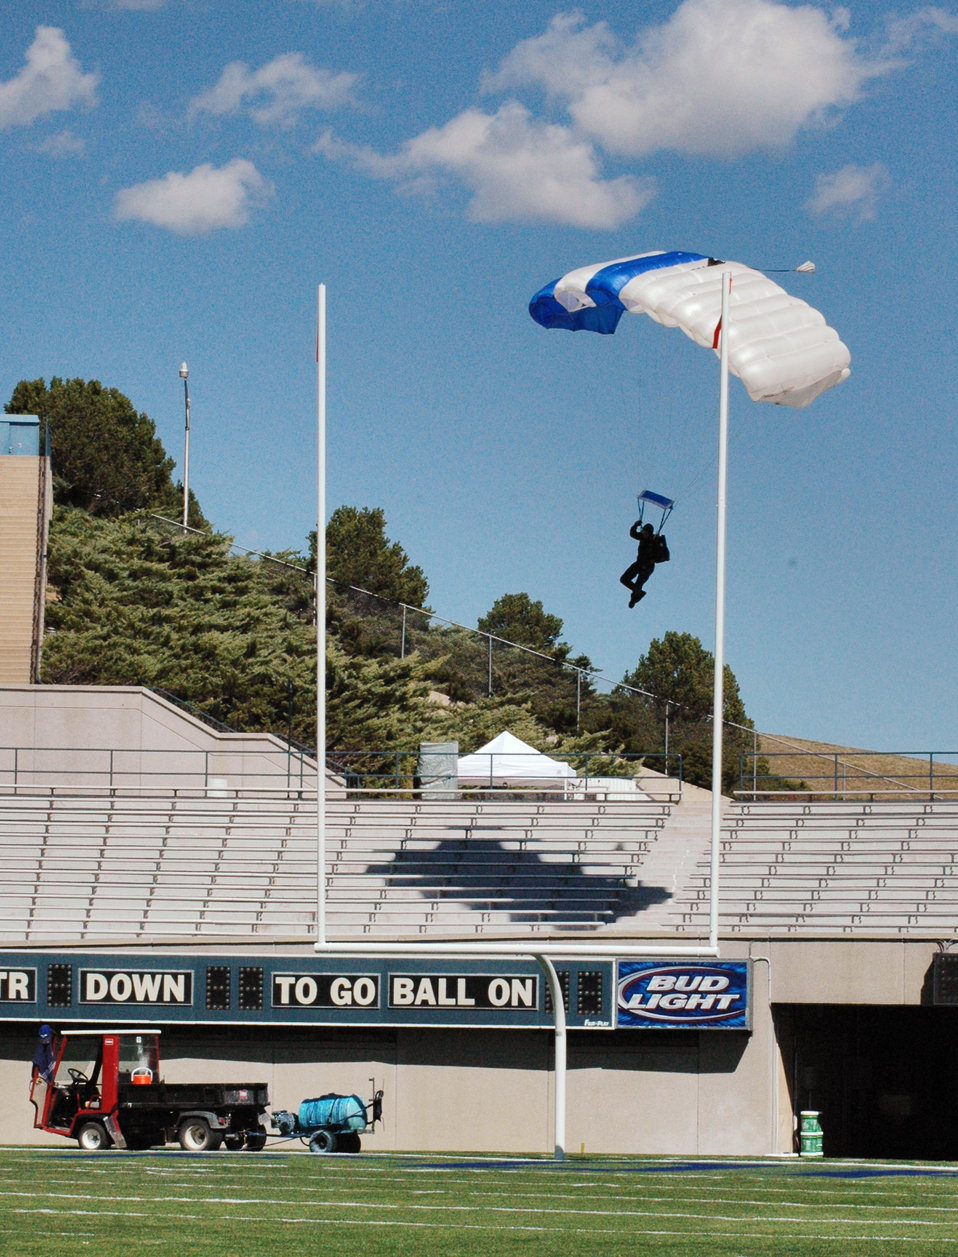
Wings of Blue

U.S. AIR FORCE ACADEMY, Colo. -- Tech. Sgt. Lee Blackwell lines up for a perfect landing during a